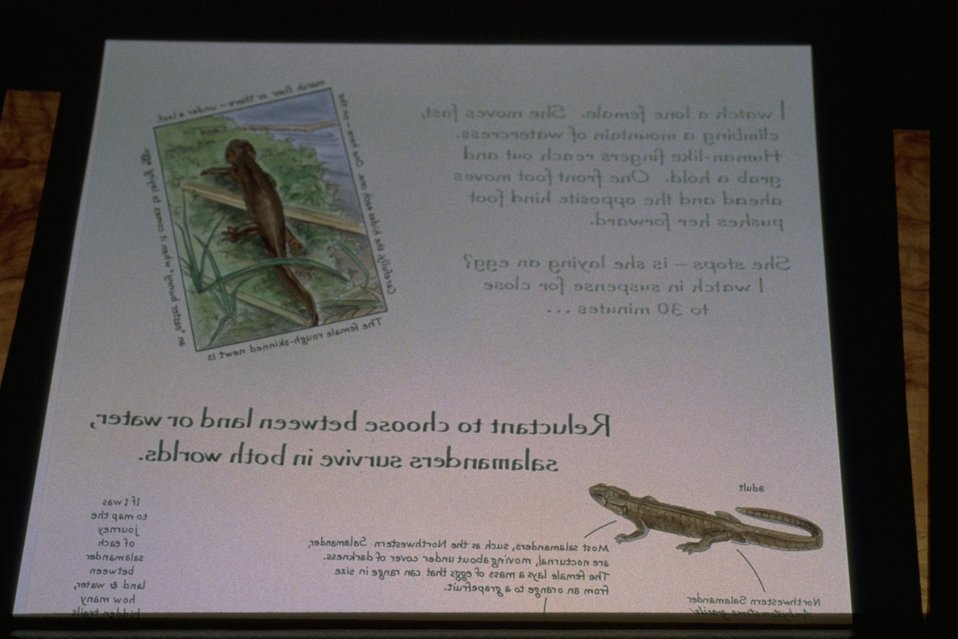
Interpretive Panels: Boardwalk Trail Journals.